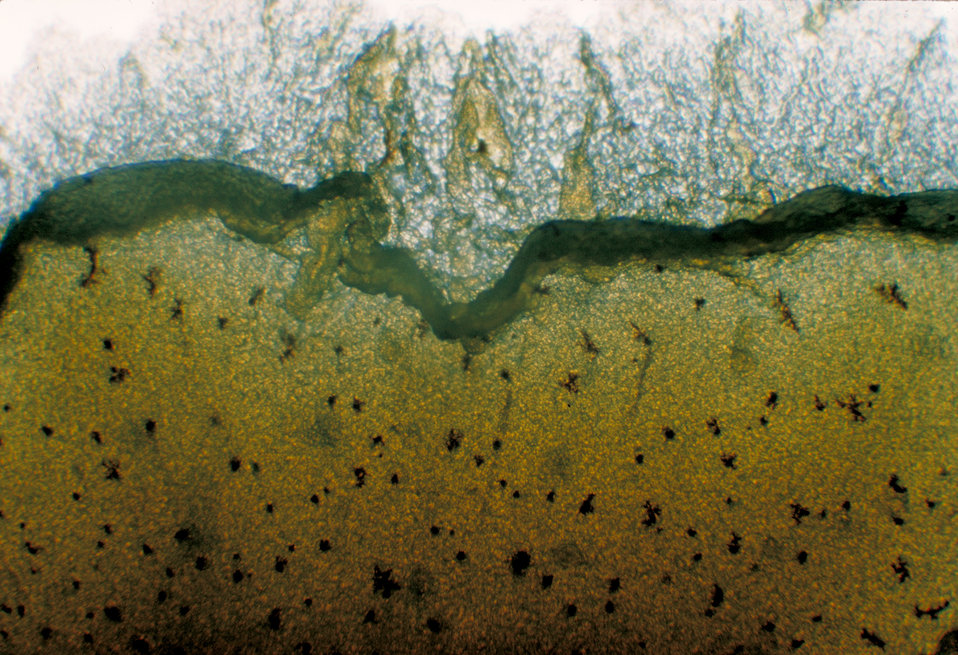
This extreme close-up of a plate culture of Mycobacterium balnei reveals a smooth colony margin with transmitted light.